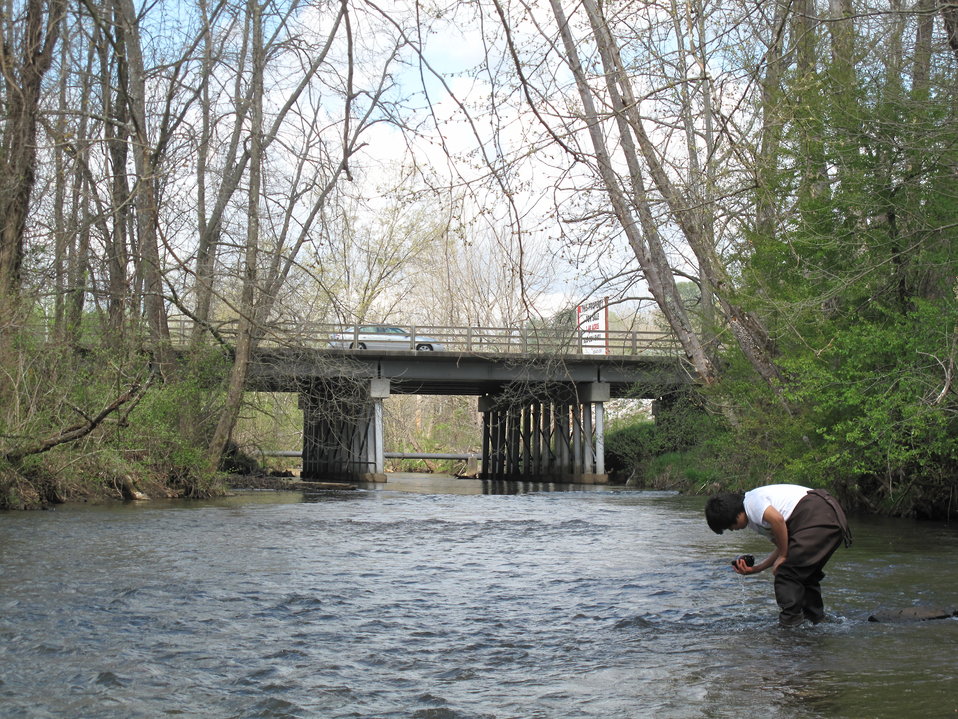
Student checking rock for insects

Over the course of four days in late April 2014, every eighth grade student at North Carolina’s Macon Middle School, Highlands School, Nantahala School, and Trimont Christian Academy visited Cartoogechaye Park, in Macon County, to learn about rivers.

The students rotated through four stations:
1) water chemistry where they had the opportunity to help test water from Cartoogechaye Creek to gain an idea of the stream’s water quality;
2) aquatic insects, where students collected and identified animals like mayflies and caddisflies, learning how life in the river reflects the health of the river
3) fish, where they were able to collect and identify fish in the stream, and then
4) stream flow, where they measured and calculated the downstream movement of water, including the velocity of the water and the total volume of water being moved per second.

The event was organized by the University of Georgia's Coweeta Long-Term Ecological Research (LTER) Program, which is based at the USFS Coweeta Hydrologic Laboratory. (coweeta.uga.edu/), with sizable support from the Land Trust for the Little Tennessee. Other supporters include the U.S. Fish and Wildlife Service, N.C. Natural Heritage Program, and N.C. Division of Water Resources.